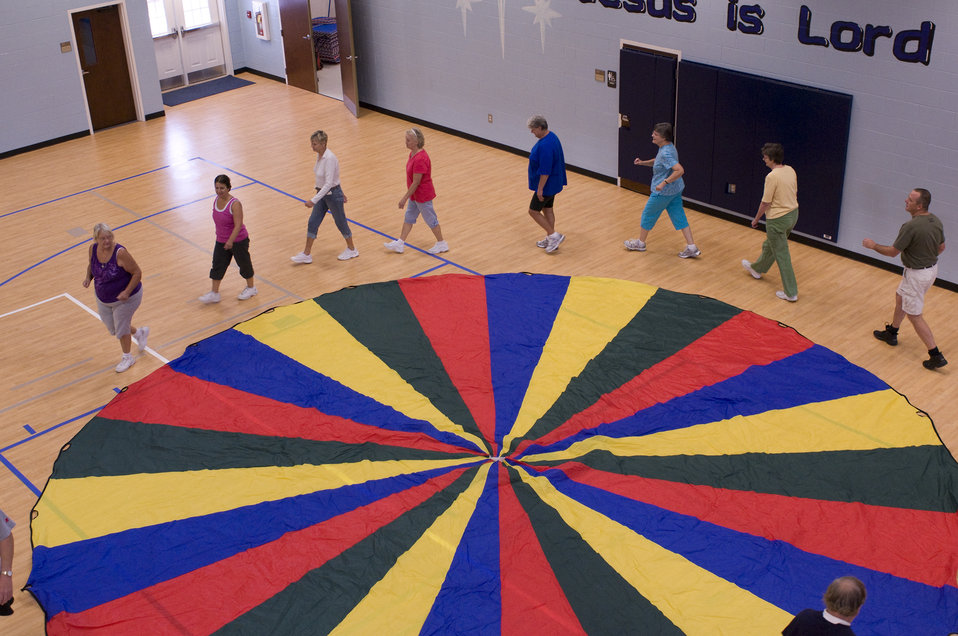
The older individuals pictured here on the wooden floor of an indoor basketball court, were participating in an exercise class consisting of stretching, and aerobic repetitive motion movements. The group members were working the muscles of their shoulders and arms by raising their outstretched arms over their heads then back down again, repeating this motion, while they held on to a large multicolored tarpaulin, which had been equipped with handles along its rim. At this particular point in this exercise, the participants had each released hold on the tarp, and were walking in a counter-clockwise direction around the tarp's outer rim.